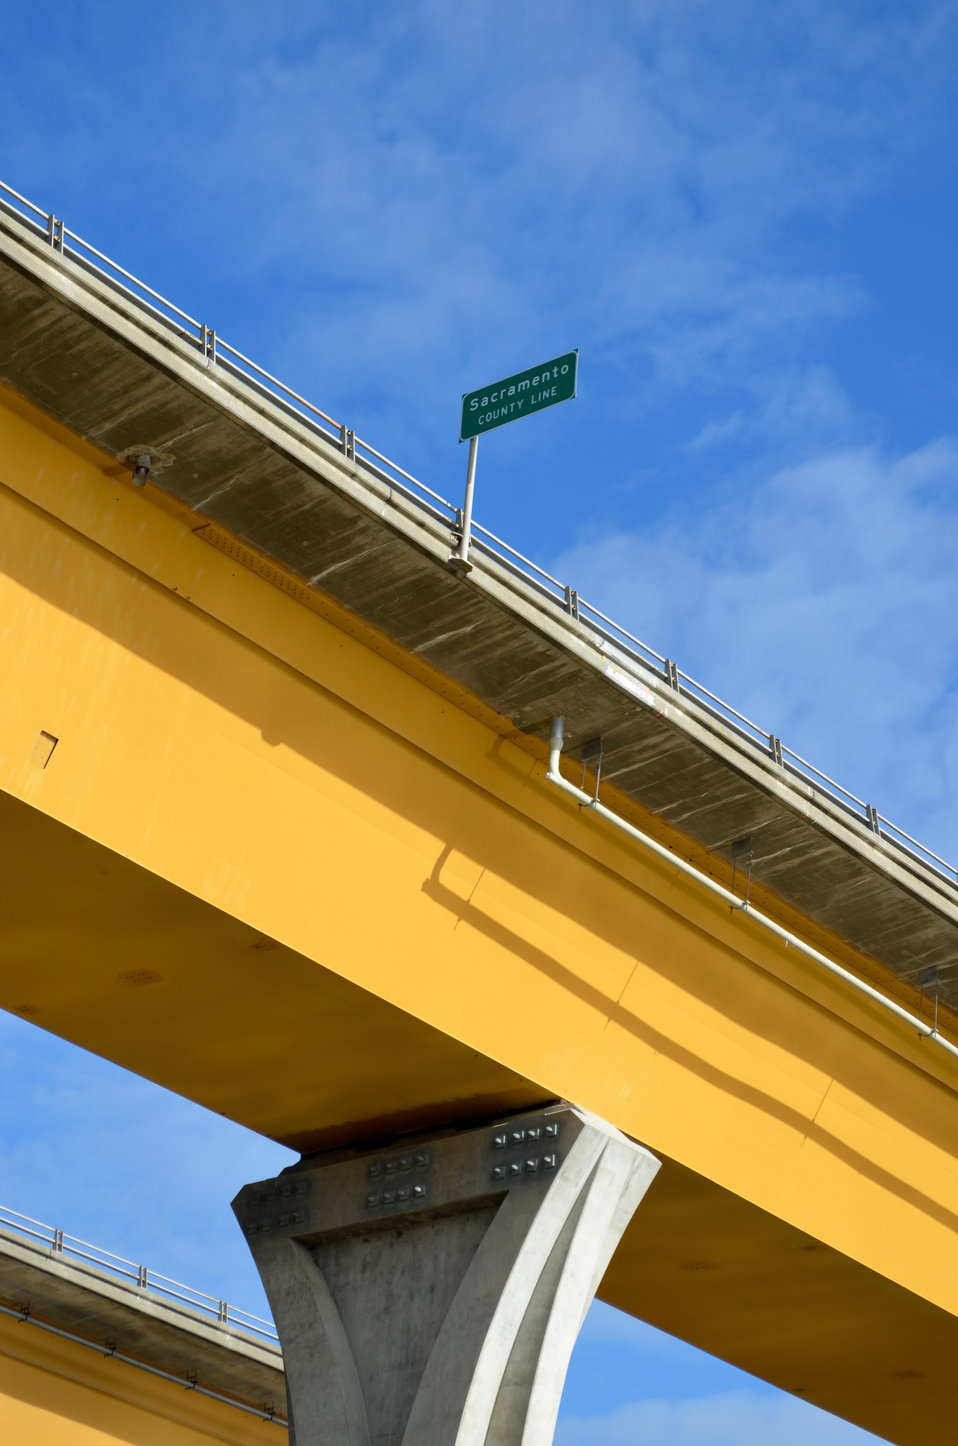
Skyward view from the Sacramento River

A sign marks the Sacramento County line on Interstate 5 Bridge over the Sacramento River near Sacramento, Calif., March 21, 2012. The U.S. Army Corps of Engineers Sacramento District provides safer river navigation by maintaining 54 wing dam buoys on the Sacramento River between its confluences with the Feather River to the north and the American River to the south.